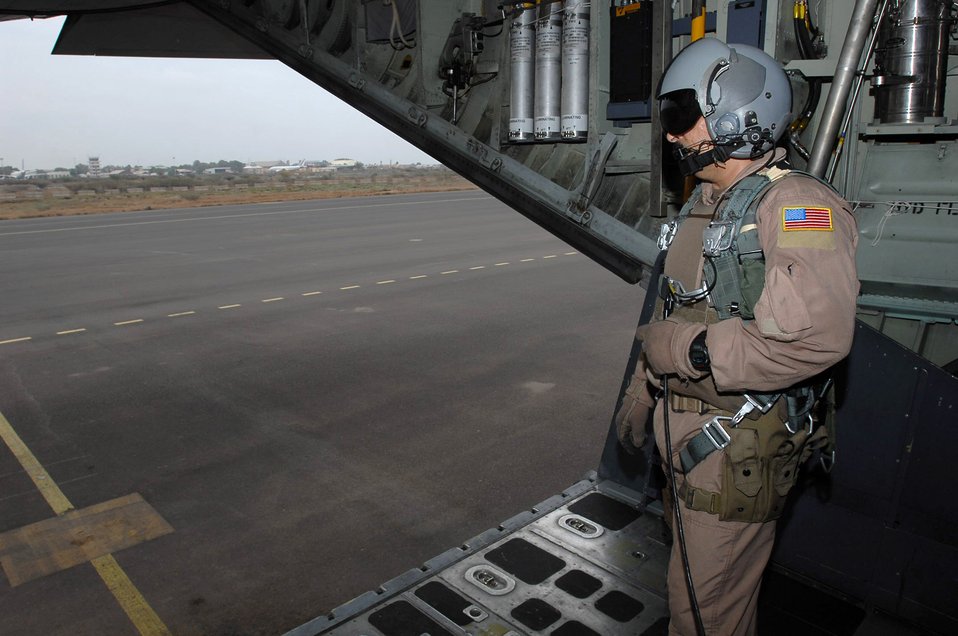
April 18 airpower: C-130s provide heavy airlift support

Senior Master Sgt. Karl Cdebaca looks out of the back of an HC-130 aircraft during a Combined Joint Task Force-Horn of Africa mission. Sergeant Cdebaca is deployed to Africa from the 39th Combat Rescue Squadron at Patrick Air Force Base, Fla. CJTF-Horn of Africa is a unit of United States Central Command. The organization's mission is to prevent conflict, promote regional stability and protect coalition interests in order to prevail against extremism.